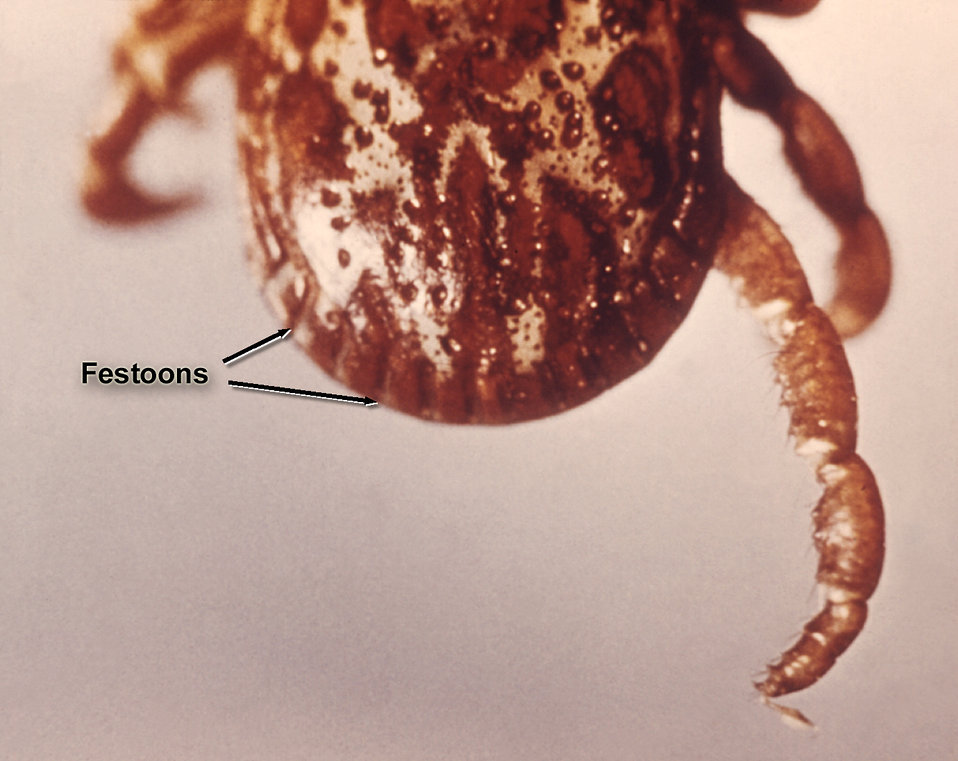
This tick is a member of the genus Dermacentor, and displays eleven 'festoons' along the posterior margin of its body.